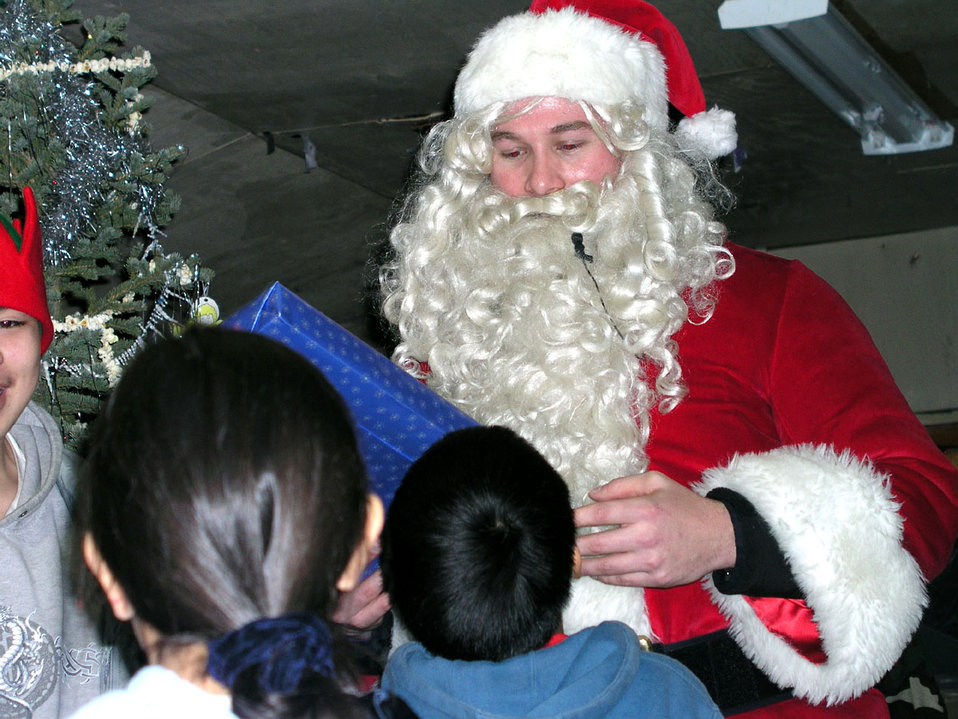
Holiday cheer

ARCTIC VILLAGE, Alaska -- Santa hands out Christmas gifts to the children here Dec. 15. Airmen and their spouses from the 517th Airlift Squadron at Elmendorf Air Force Base, Alaska, visit the village every December to donate gifts, food and supplies.